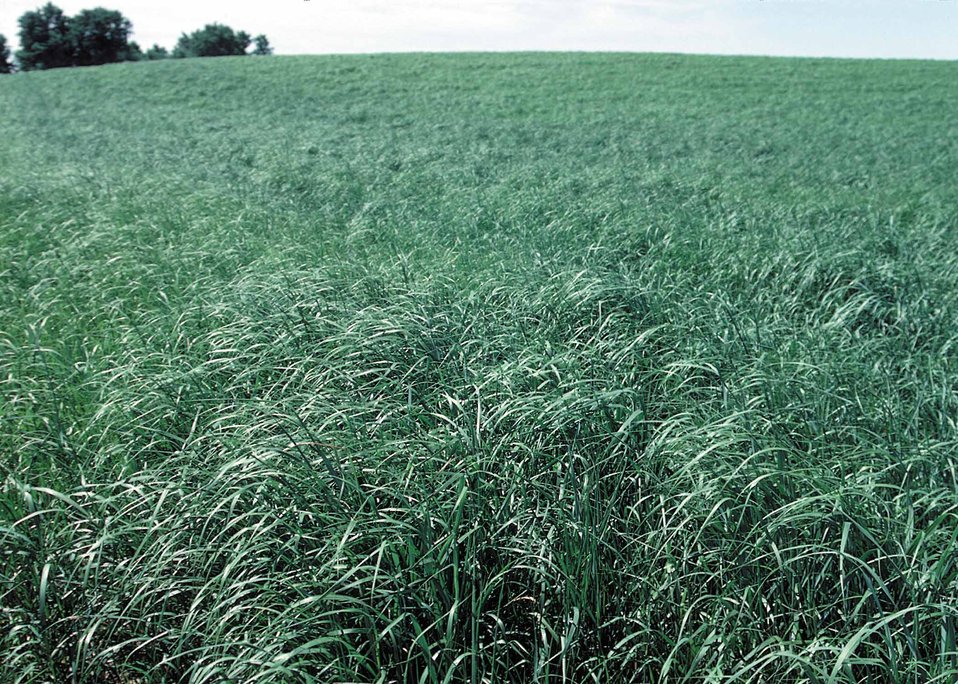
Switchgrass offers ground cover and wildlife habitat in a field put into the Conservation Reserve Program in southern Iowa.